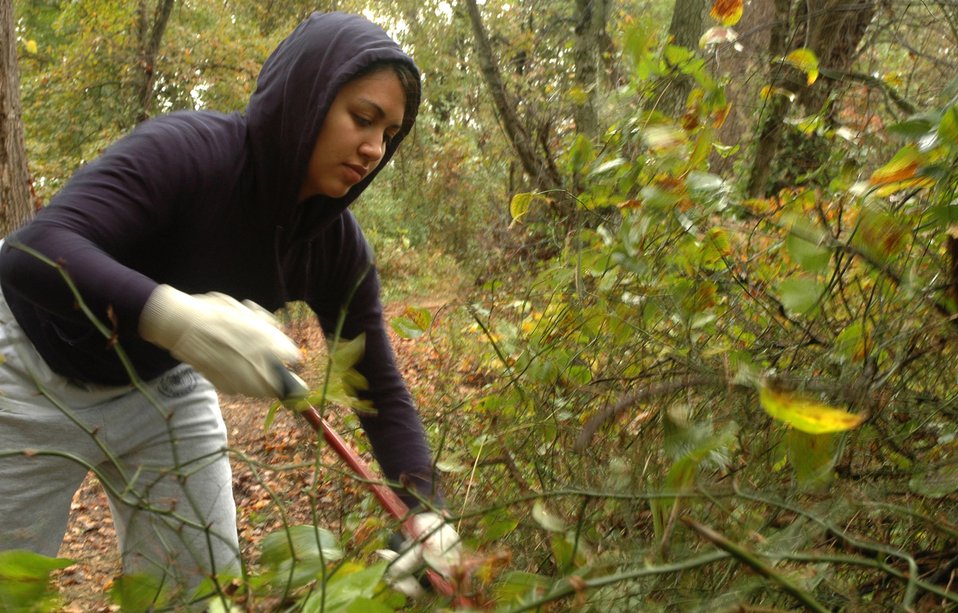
Servicemembers make a difference

Airman 1st Class Lorena Montoya, 11th Mission Support Squadron, prunes shrubs and other invasive plants along a walking trail Oct. 25 at Kenilworth Aquatic Garden in Washington, D.C. Airman Montoya was one of 176 servicemembers who volunteered at the garden as part of a joint service project for national